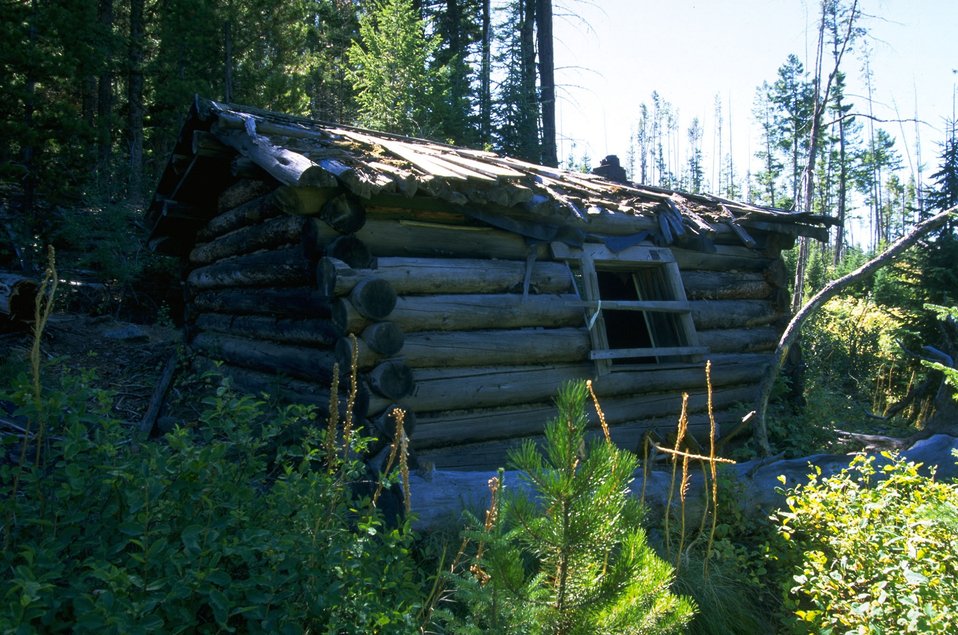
Dilapidated cabing in Coloma Ghost Town